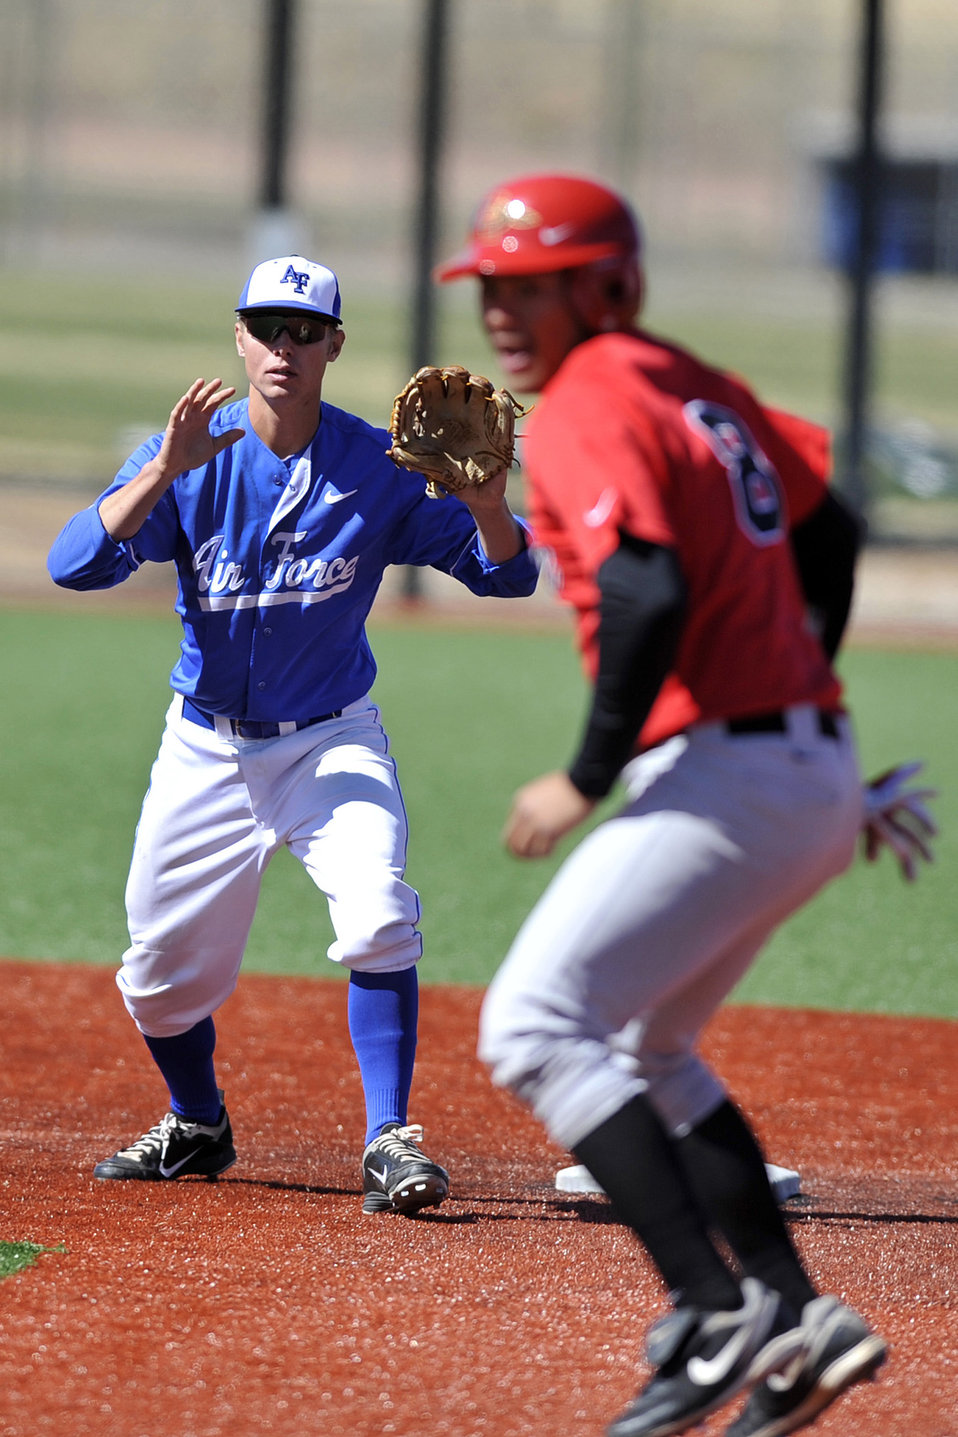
Falcons vs. Aztecs

Junior Blair Roberts starts a rundown against San Diego State base runner Evan Potter during a match against San Diego State April 22, 2011, at Falcon Field in Colorado Springs, Colo. The Falcons defeated the Aztecs 7-3. The win was the first for the Falcons against the Aztecs in 35 contests dating back to 2003.